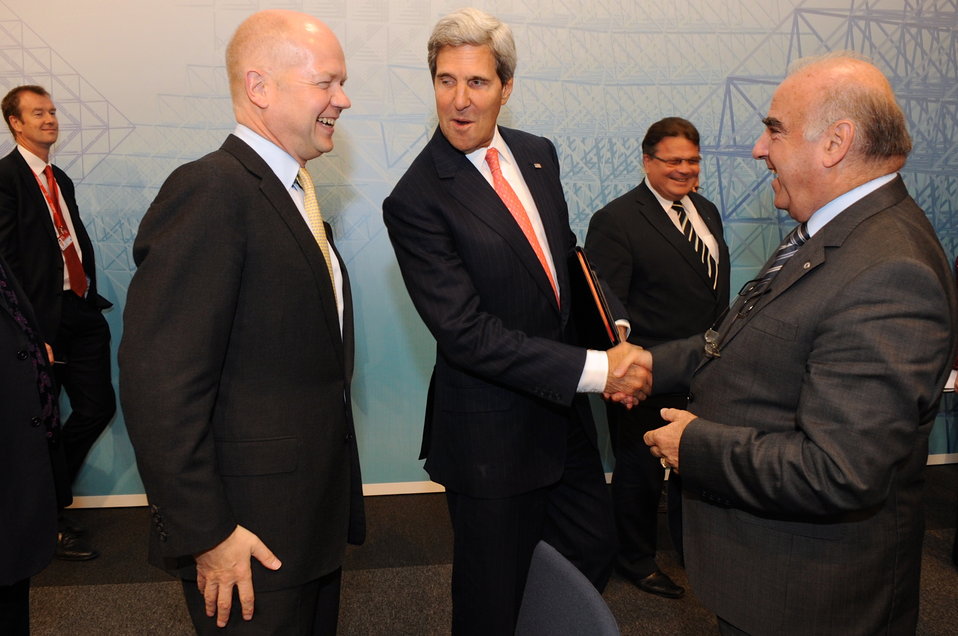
Secretary Kerry Greets EU Foreign Ministers

U.S. Secretary of State John Kerry greets British Foreign Secretary William Hague and Foreign Minister George Vella of Malta before the start of a meeting of EU Foreign Ministers in Vilnius, Lithuania, on September 7, 2013.